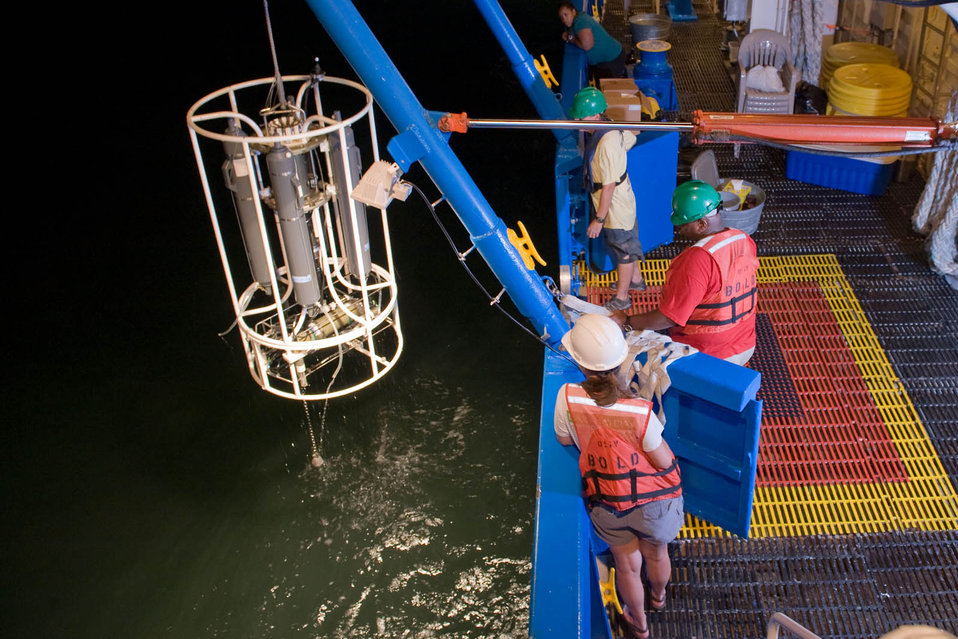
Water sampling at night

Studying the water column can even take place in the dark! It often does on the Bold. EPA uses the ship to it's fullest potential while out on survey. Surveys can include multiple teams of scientists that will rotate sampling shifts throughout a 24 hr day.

US EPA photo by Eric Vance. GPS coordinates available in metadata.